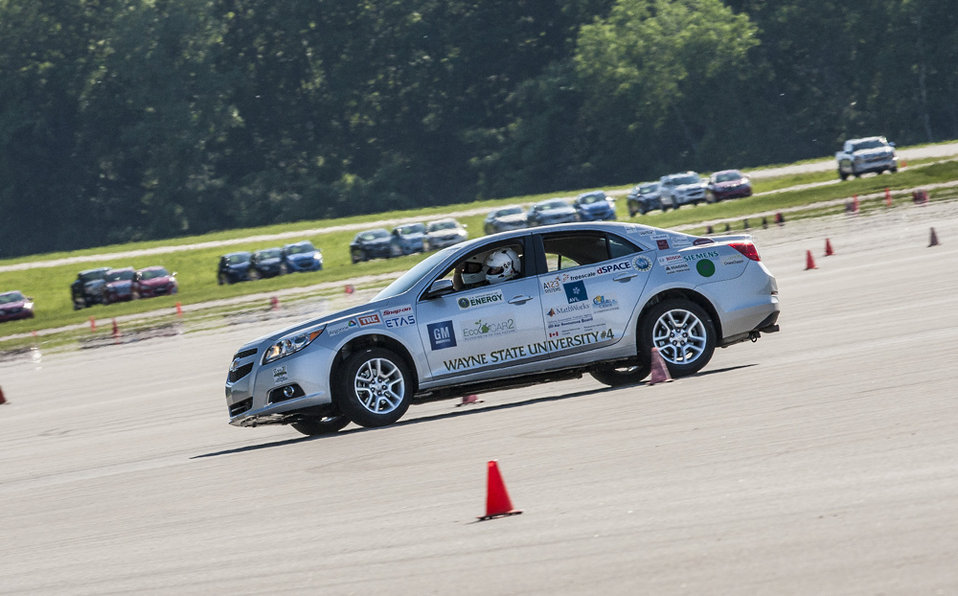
GM professional drivers pushed the teams’ vehicles to the limits to measure the cars’ performance in the Autocross Event (a key part of vehicle testing). The drivers made three attempts through the serpentine coned-course, trying to beat the stock vehicle’s time. For the first time in an Energy Department advanced vehicle competition, all 15 teams qualified to compete in the Autocross Event after having passed both the safety tech and on-road safety evaluation. In the end, Wayne State University’s car had the fastest Autocross time, beating the stock vehicle’s time by nearly 0.6 seconds. | Photo courtesy of EcoCAR 2.